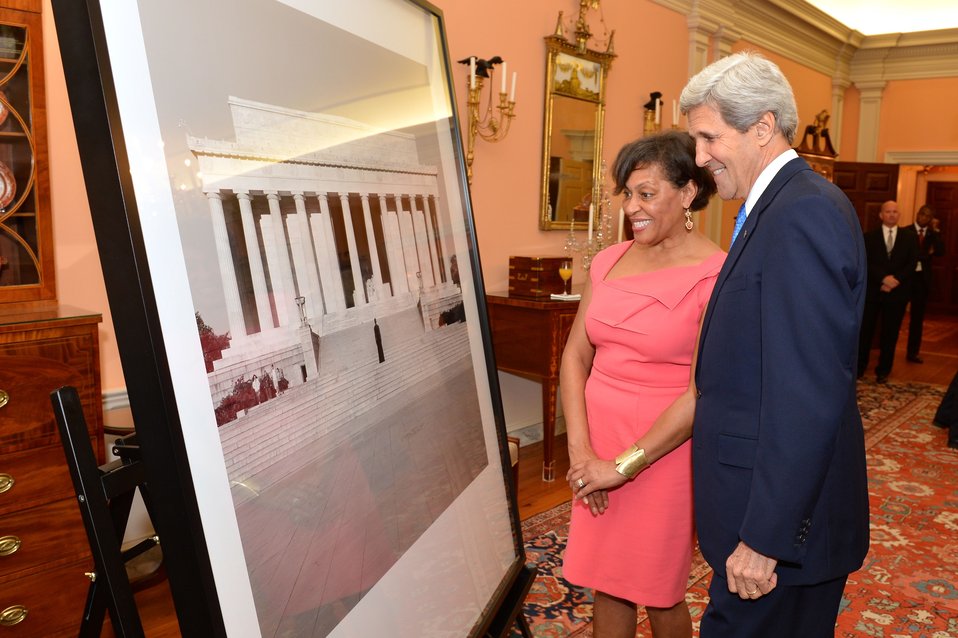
Secretary Kerry Admires Carrie Mae Weems' Photograph

U.S. Secretary of State John Kerry admires photo taken by American artist Carrie Mae Weems, at the Foundation for Art and Preservation in Embassies (FAPE) Dinner at the U.S. Department of State in Washington, D.C., on May 7, 2014.